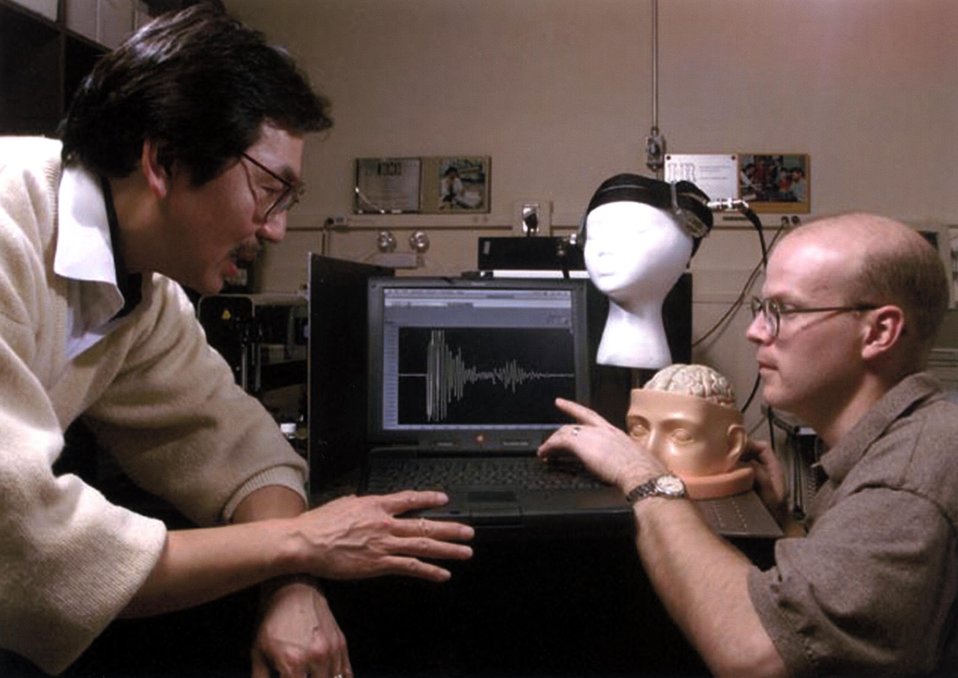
OAK RIDGE TECHNOLOGY FOCUSING ON BRAIN INJURY DETECTION.

RESEARCHERS AT ORNL HAVE DEVELOPED A TECHNIQUE THAT CAN SCREEN PATIENTS FOR BRAIN DAMAGE USING A PORTABLE INSTRUMENT RATHER THAN THE CAT SCAN. THIS NON-INVASIVE METHOD PENETRATES THE SKULL USING DIFFERENT TYPES OF ULTRASOUND, ALLOWING DOCTORS TO QUICKLY AND ACCURATELY EVALUATE THE EXTENT OF A HEAD INJURY.